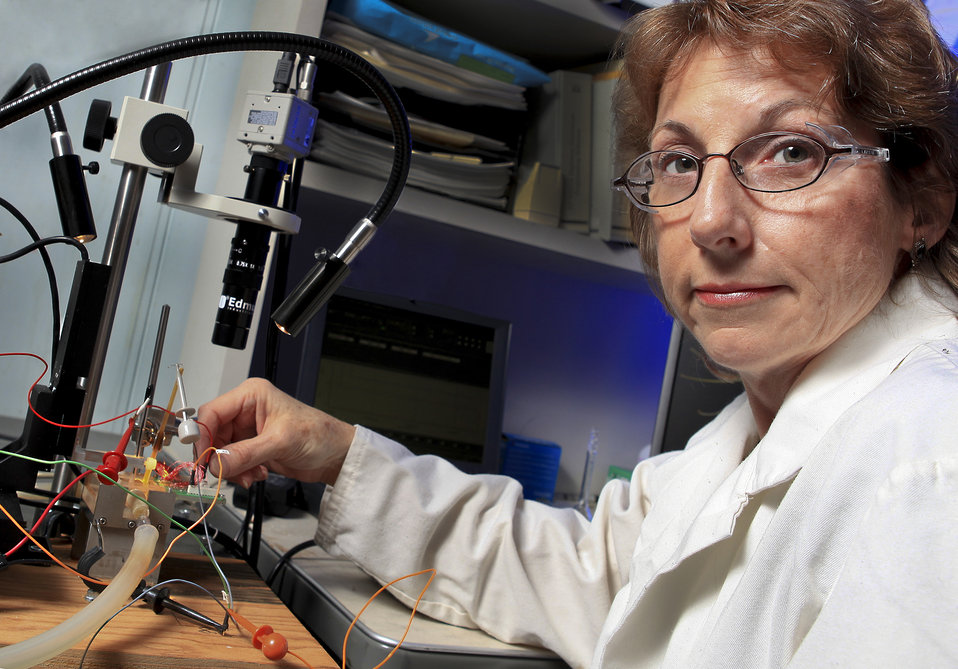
Charlene Sanders is working on the Artificial Retina Project at Oak Ridge National Laboratory.

The U.S. Department of Energy's Artificial Retina Project is a collaborative, multi-institutional effort to develop an implantable microelectronic retinal prosthesis that restores useful vision to people blinded by retinal disease. The ultimate goal of the project is to restore reading ability, facial recognition, and unaided mobility in people with retinitis pigmentosa and age-related macular degeneration. The research team includes six DOE national laboratories, four universities, and private industry.